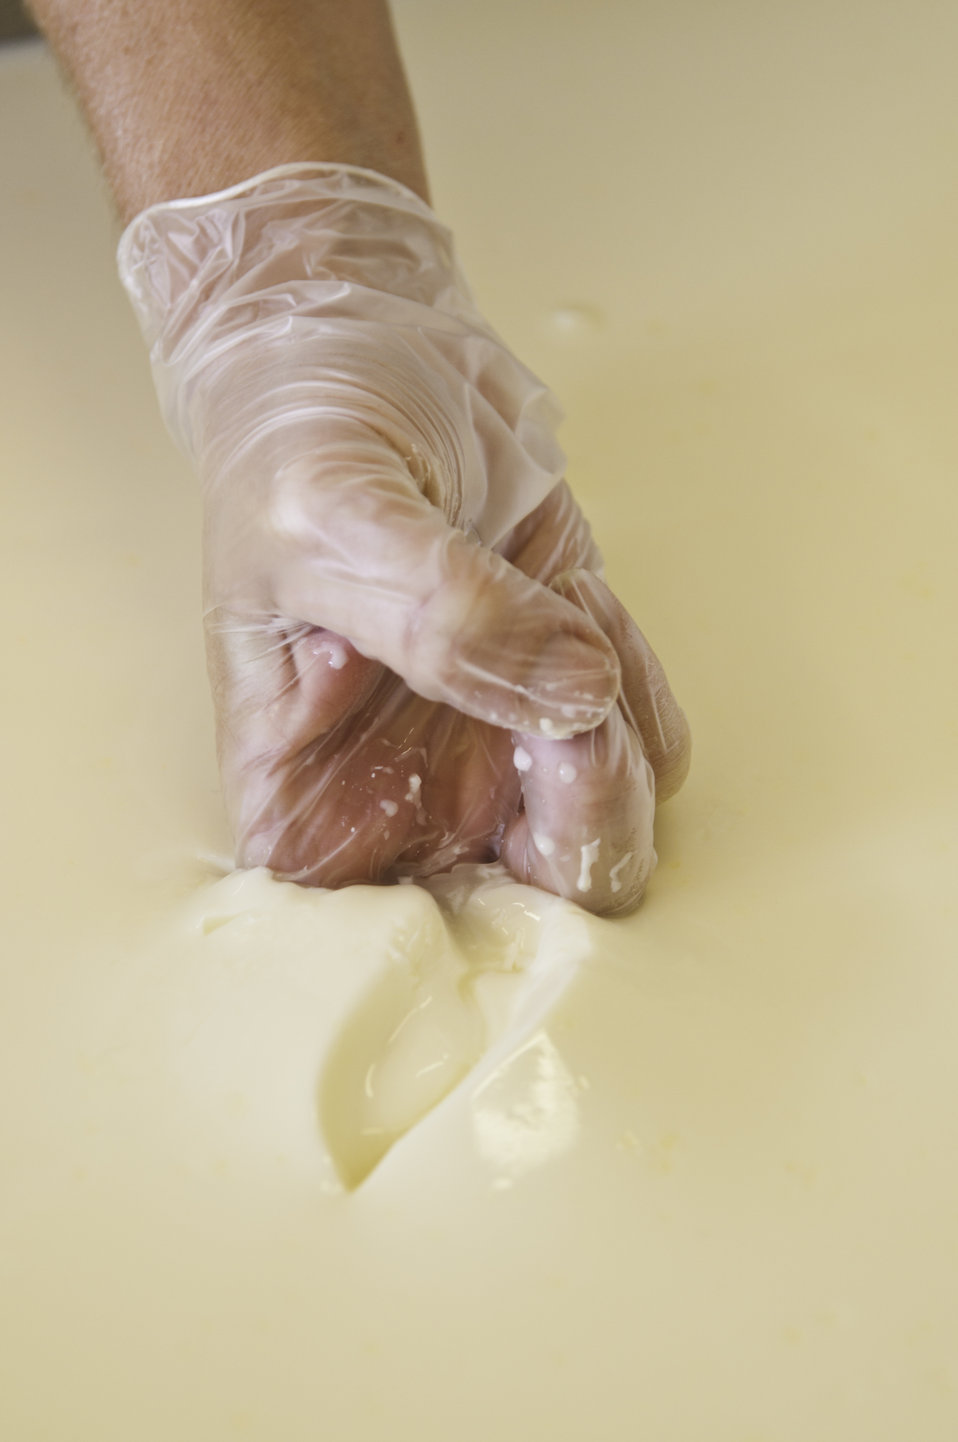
Chapel’s Country Creamery owner Holly Foster in Easton, MD checks the set of the milk curd from fresh raw milk after vegetable rennet was added to the milk and let set, until it reaches a custard like consistency. The time varies from 30 minutes to 2 hours. The staff personally tests to see if it is ready to cut. Only a true cheese maker can tell when the curd is ready to be cut. Next, the curd is cut into small cubes with curd knives. Timing is everything in this step. Then the curds are cooked and stirred in the whey that was expelled in the cutting process. The dairy uses fresh raw milk 12-24 hours old. The milk is all-natural and contains no synthetic hormones, antibiotics, or chemical compounds. The 1150 pounds of milk in the vat will be used to make the dairy’s “Bay Blue” Cheese.